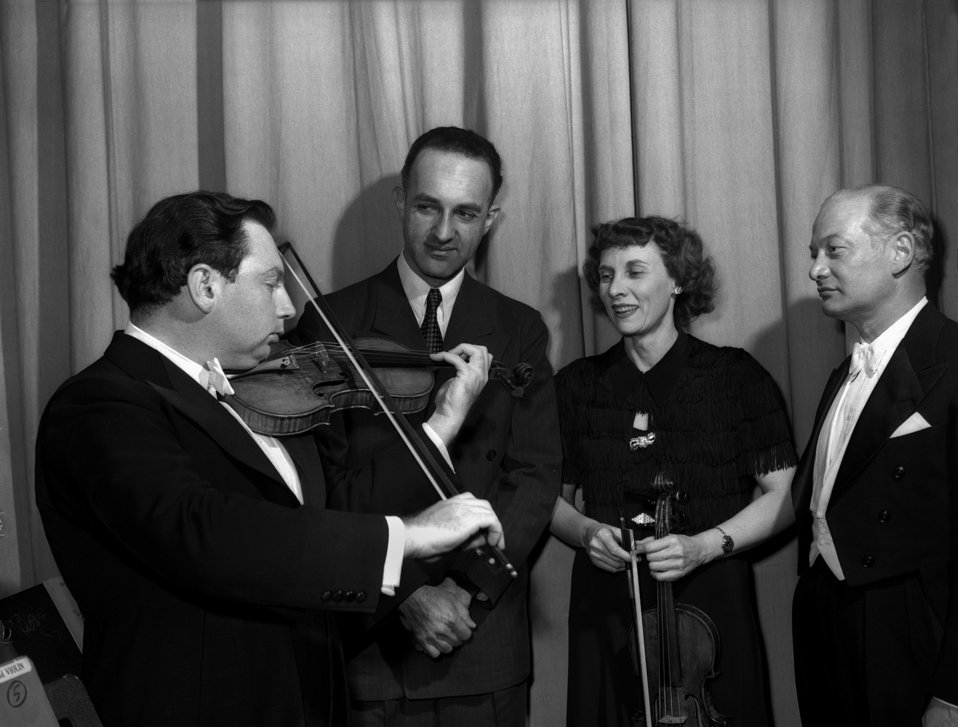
Isaac Stern violinist and conductor visits with Oak Ridge Symphony

4307 DOE photo by Ed Westcott
Oak Ridge Tennessee 2-7-1948